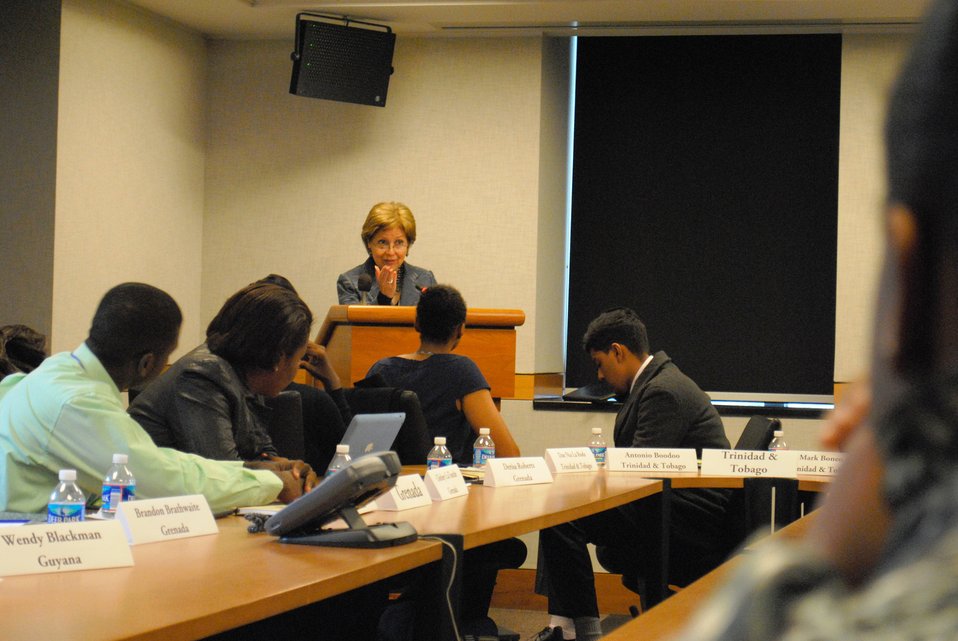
Deputy Assistant Secretary Ayalde Speaks With Caribbean Youth Ambassadors

Deputy Assistant Secretary of State for Western Hemisphere Affairs Liliana Ayalde speaks with Caribbean Youth Ambassadors at the U.S. Department of State in Washington, D.C., on February 22, 2013.